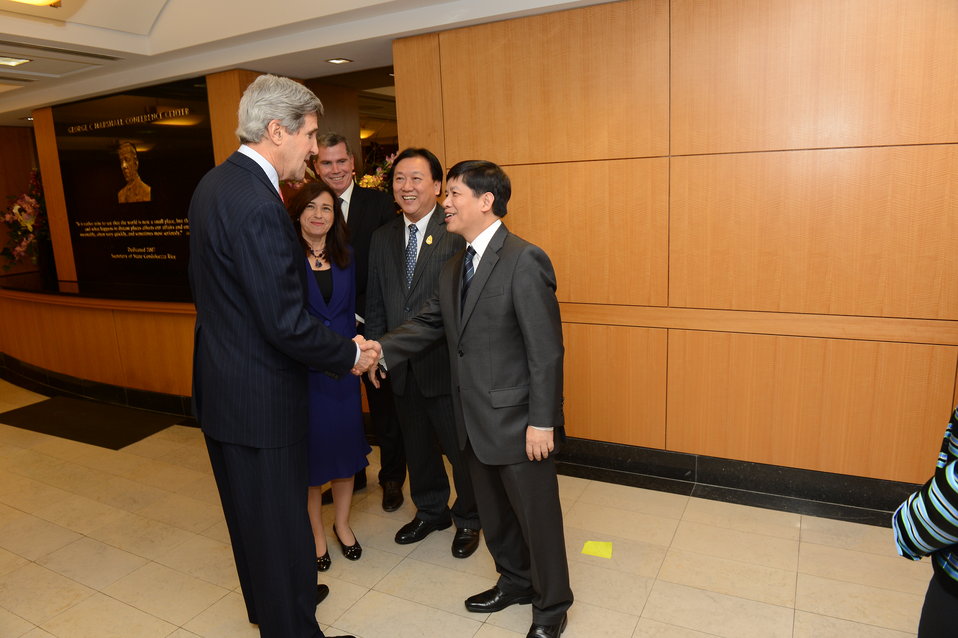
Secretary Kerry Shakes Hands With Vietnamese Ambassador to the U.S. Nguyen Quoc Cuong

U.S. Secretary of State John Kerry shakes hands with Vietnamese Ambassador to the U.S. Nguyen Quoc Cuong as Thai Ambassador to the U.S. Dr. Chaiyong Satjipanon, U.S. Under Secretary of State for Public Diplomacy and Public Affairs Tara Sonenshine, and Chilean Ambassador to the U.S. Felipe Bulnes look on at the Fulbright Foreign Student Enrichment Seminar at the U.S. Department of State in Washington, D.C., on March 15, 2013.